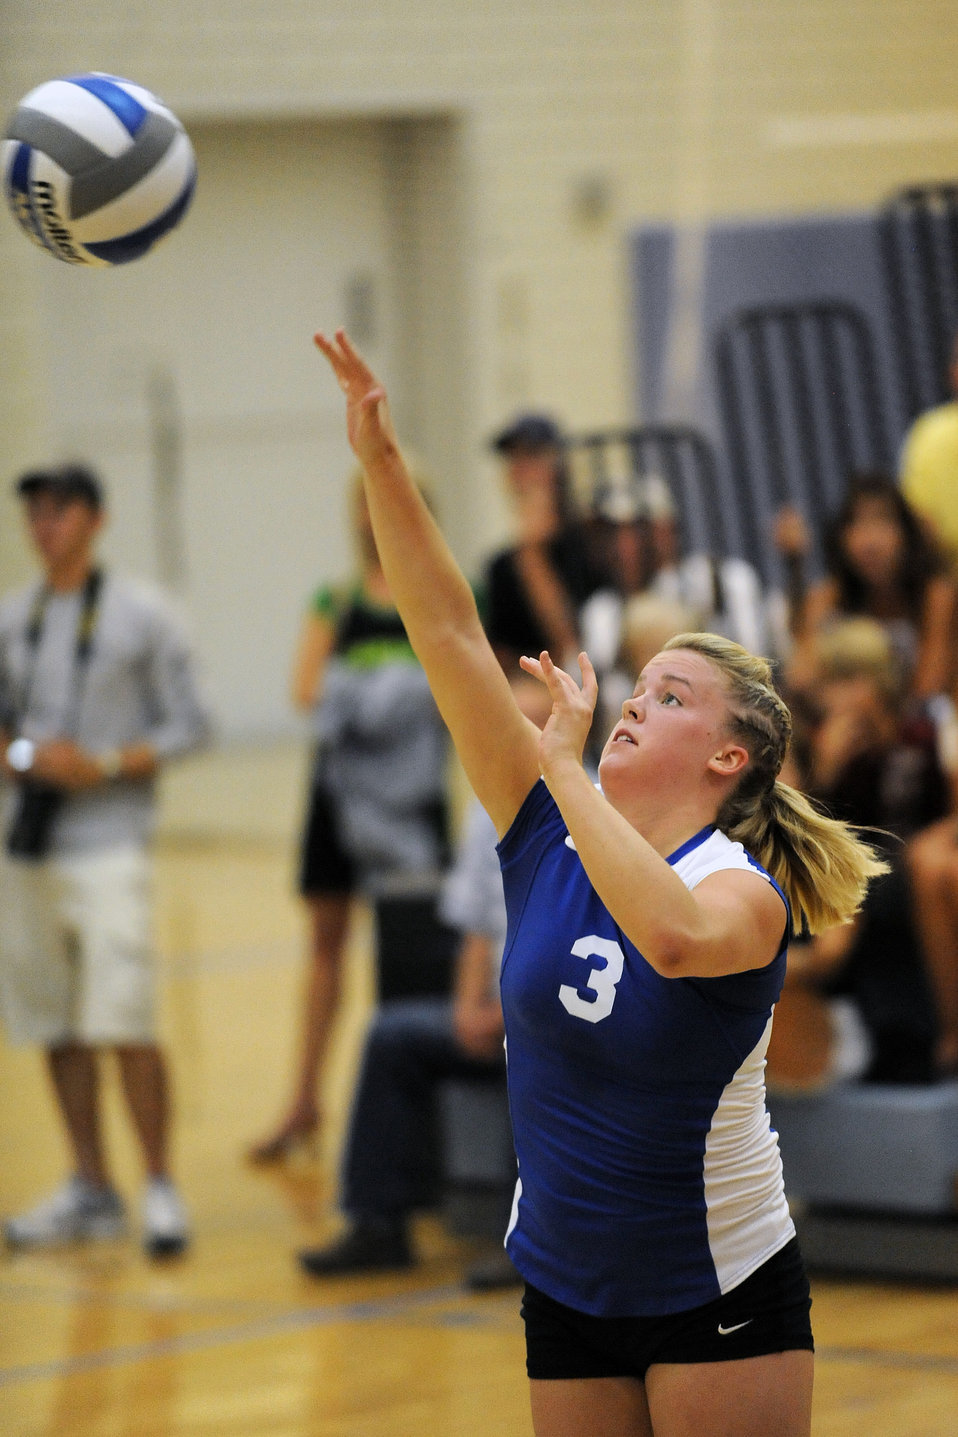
Cadet's show promise during women's volleyball tournament

The Falcons' Kelly Spencer bumps the ball during the first game of the Air Force Academy's match against Boise State University, Aug. 27, at the U.S. Air Force Academy in Colorado Springs, Colo. The Falcons fell to Boise State 1-3 with scores of 23-25, 18-25, 26-24, and 25-18.